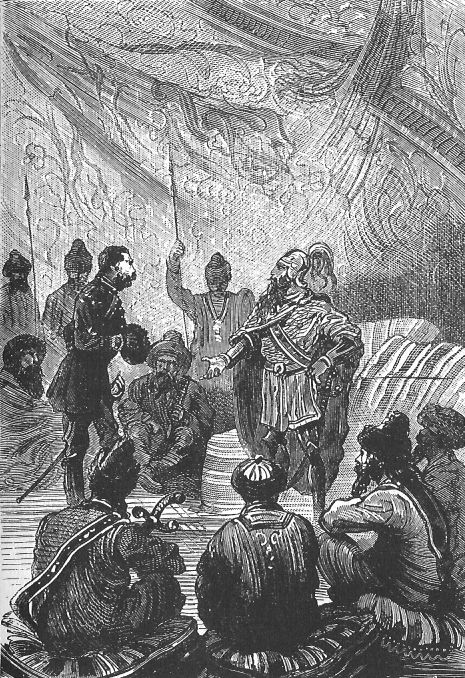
An illustration from the novel 'Michael Strogoff: The Courier of the Czar' by Jules Verne drawn by Jules Férat. Polski: Ilustracja powieści Juliusza Verne'a 'Michał Strogow, kurier carski' autorstwa Julesa Férata. Français : 'Michel Strogoff. Le courier du tzar', Jules Férat. Français : Ivan Ogareff entra et se trouva devant l’émir.